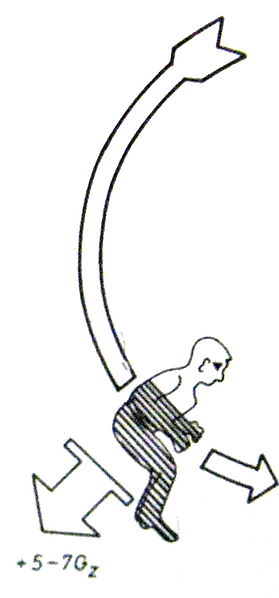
Српски / srpski: Прерасподела крви у телу пилота изложеног дејству Gz убрзања, 30.03.2010.